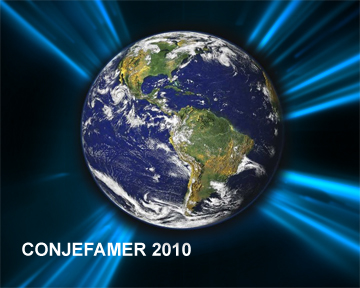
CONJEFAMER 2010